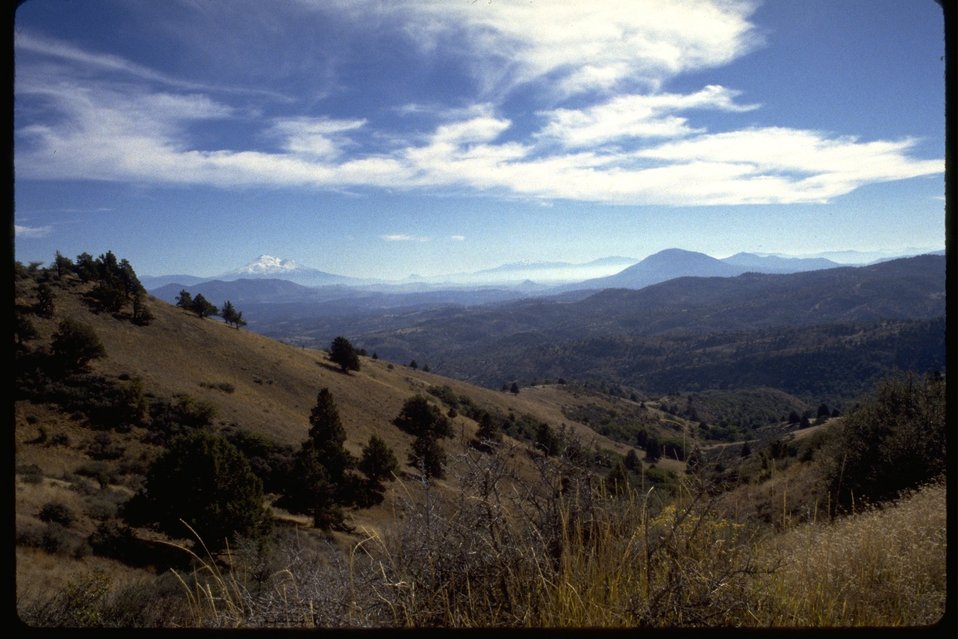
Scotch Creek RNA from Lone Pine Ridge.